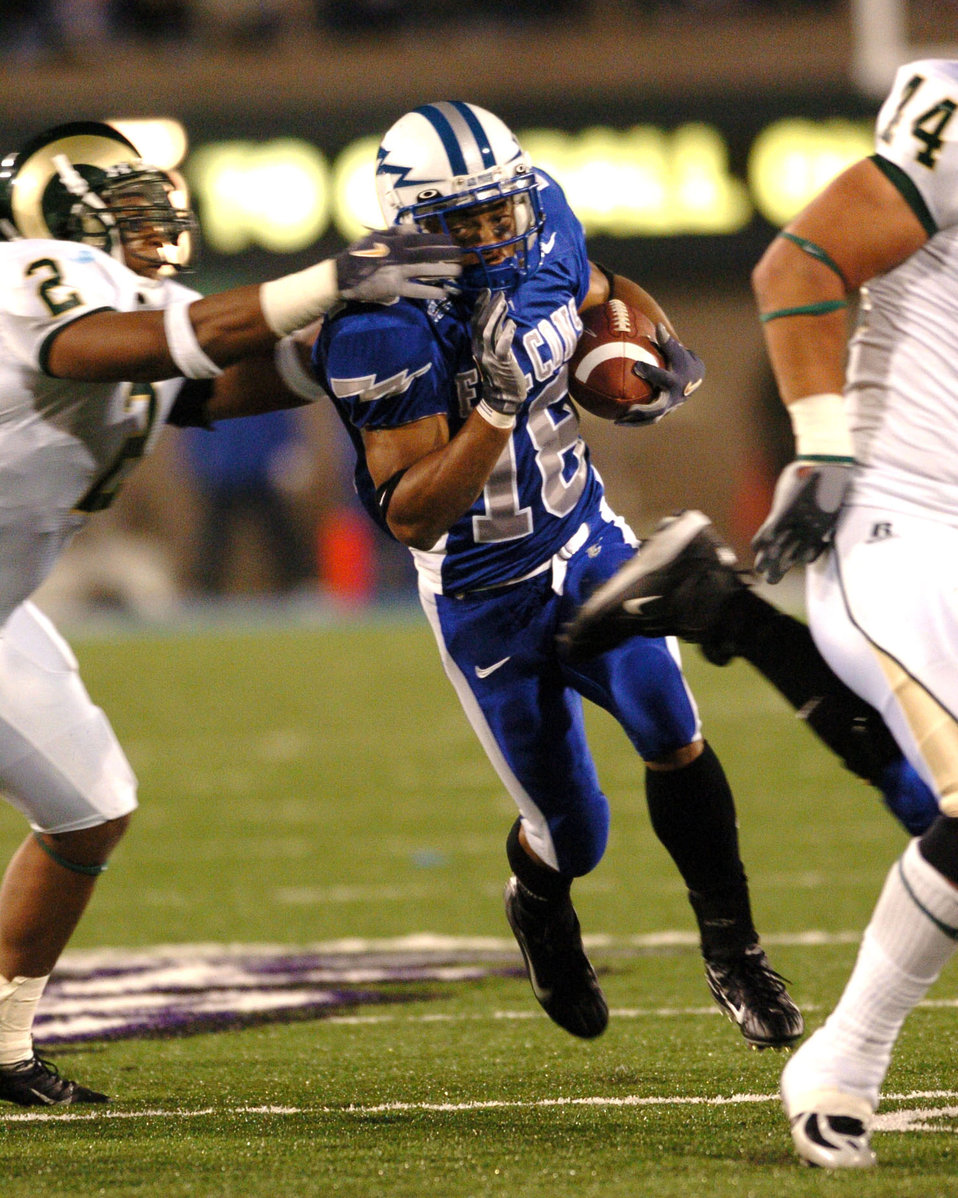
Turn & Burn

Air Force halfback Justin Handley turns the corner on Colorado State linebacker Jon Radford for a pickup of 12 and a Falcon first down Thursday night. The run helped set up a Zach Sasser field goal, providing the winning margin as Air Force defeated CSU, 24-21.